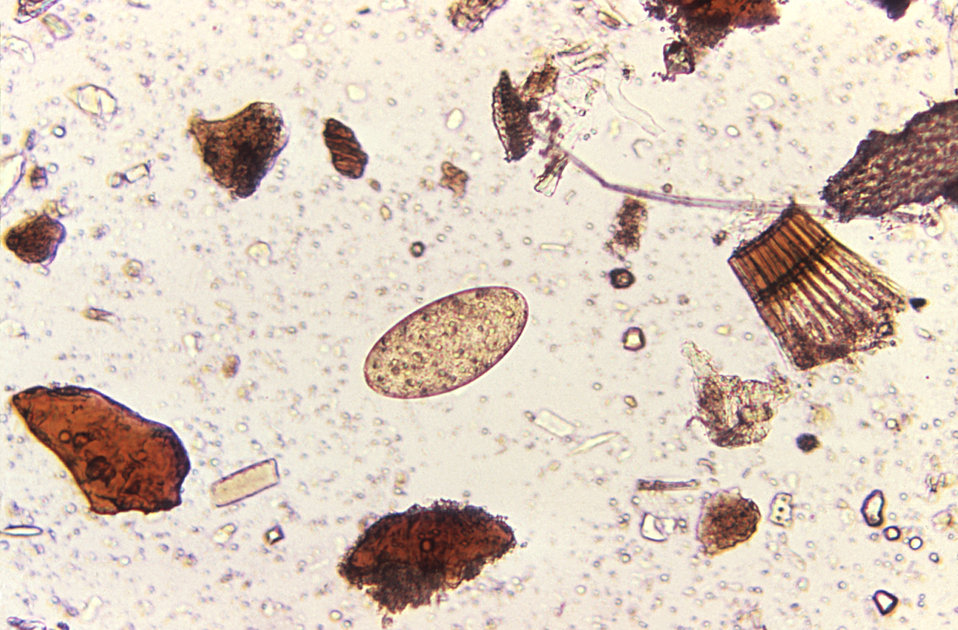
Magnified 125X, at its center, this photomicrograph revealed the presence of a Fasciolopsis buski trematode egg found in an unstained formalin-preserved stool sample. F. buski are the largest intestinal flukes found parasitizing human beings. These flukes inhabit Asia and the Indian subcontinent, especially in areas where humans raise pigs, and consume freshwater plants.